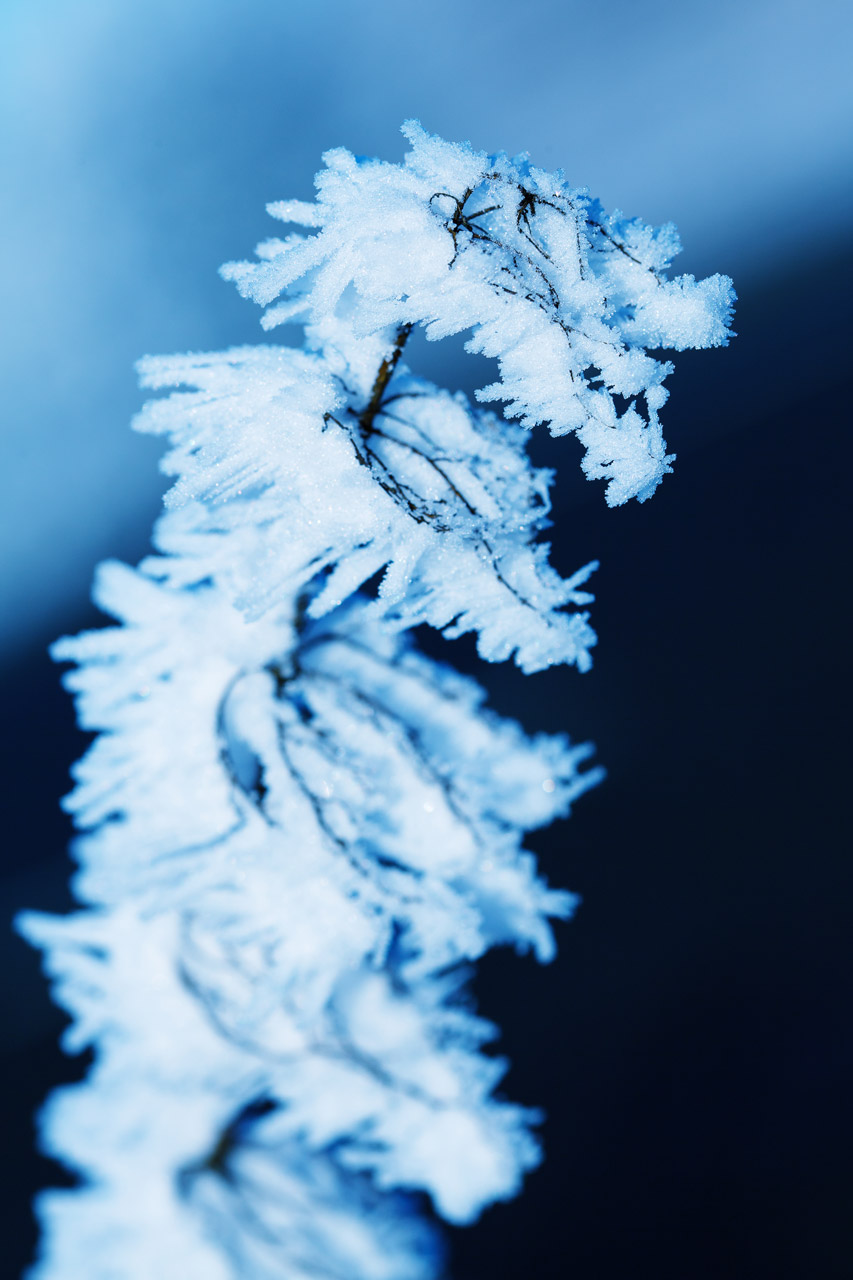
Macro hoar frost

Detail of hoar frost on grass.